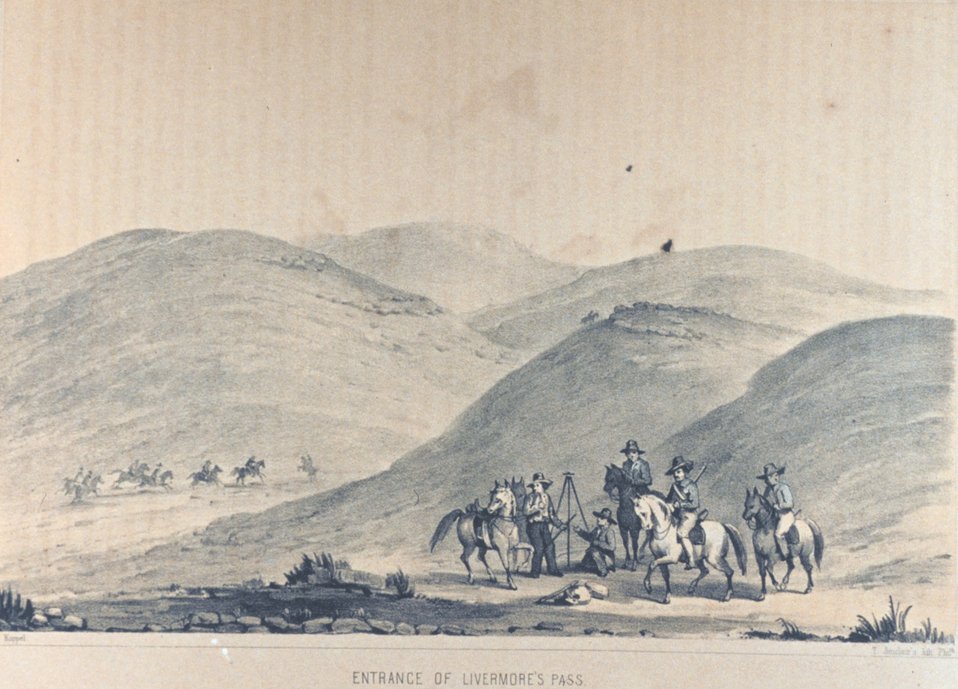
'Entrance of Livermore's Pass', Plate II. In: Reports of Explorations and Surveys .... Vol. 5, p. 12. Commonly known as Pacific Railroad Surveys. Call Number F593 .U58.